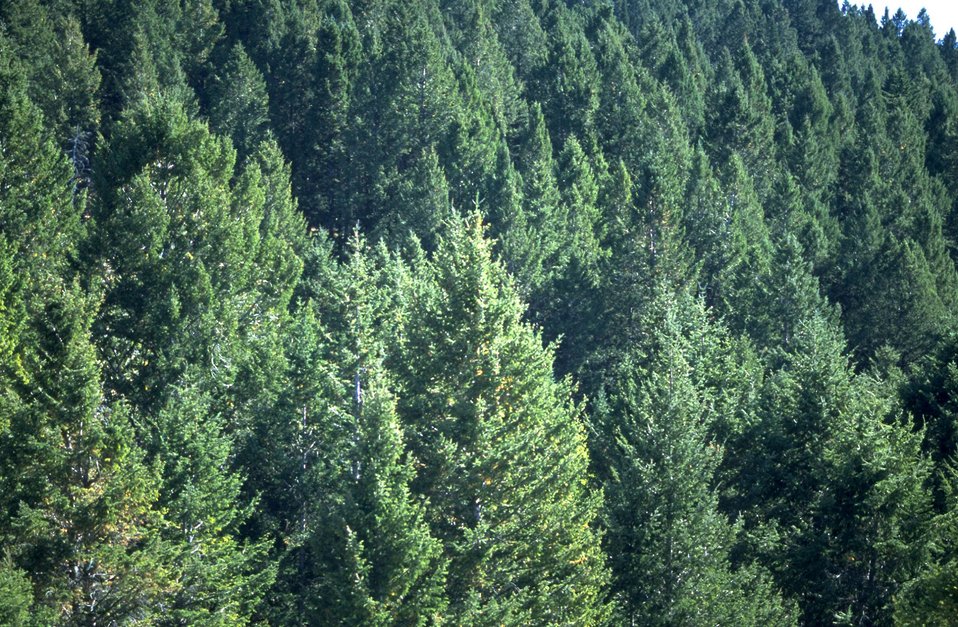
Forested slope in Centennial Mountains